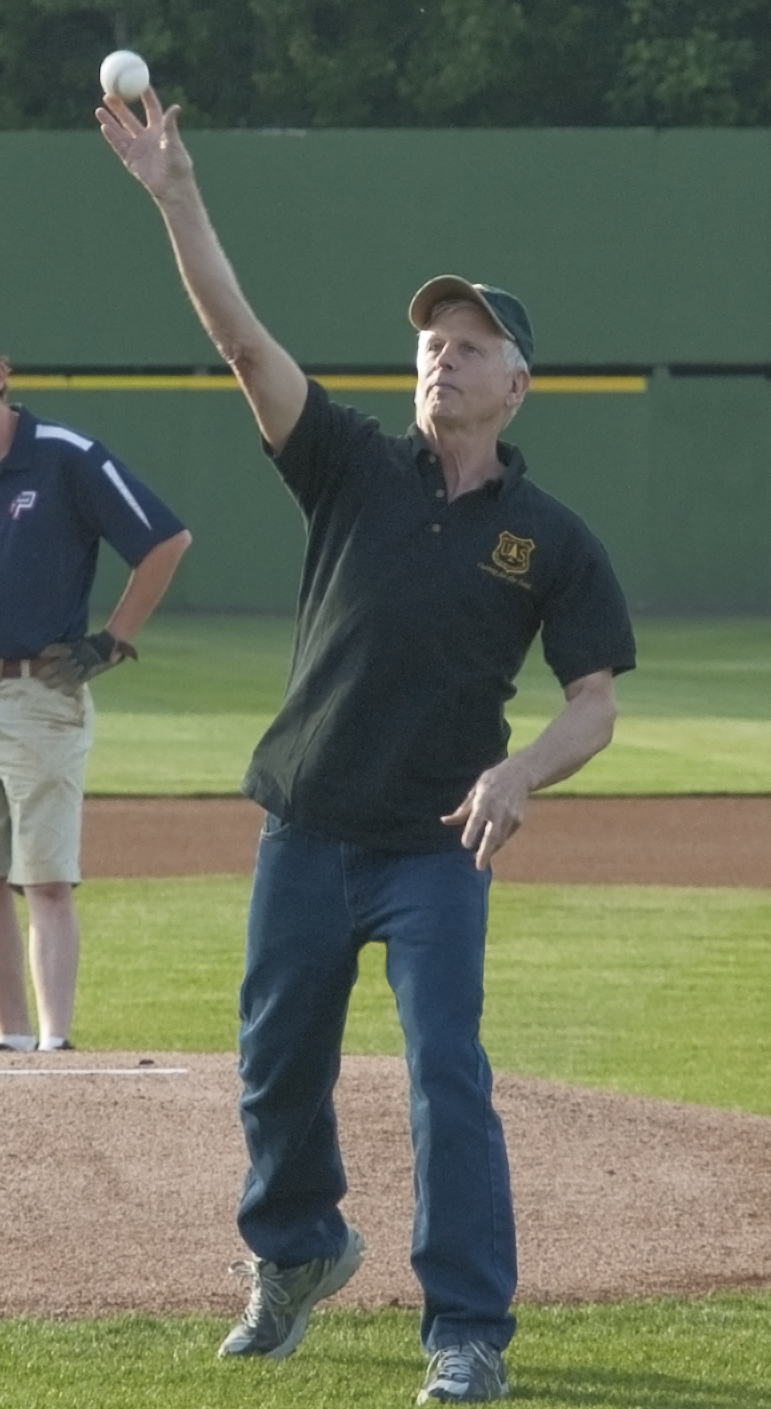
U.S. Forest Service Chief Tom Tidwell throws out the first pitch at a Potomac Nationals game to publicize the Forest Service’s “Break a Bat/Plant a Tree” partnership.